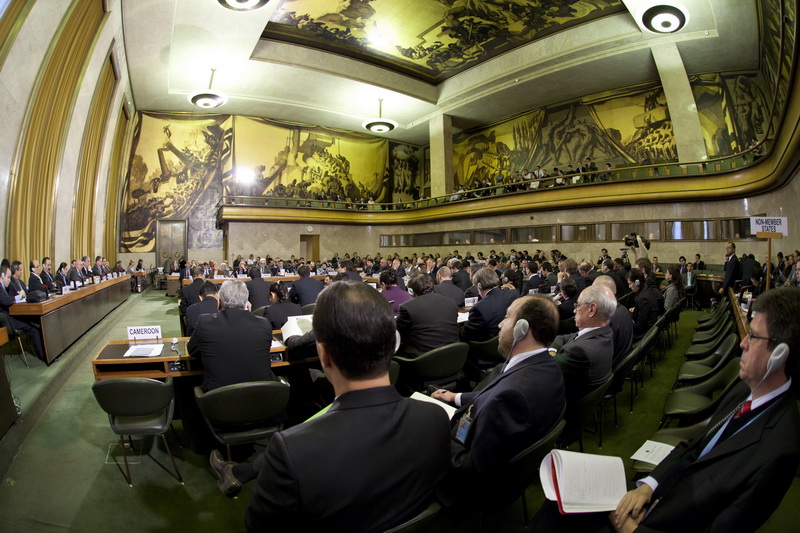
Assistant Secretary Gottemoeller Delivers the Opening Statement

Rose E. Gottemoeller, Assistant Secretary of State for Arms Control, Verification and Compliance, delivers the opening statement for the United States at the First Plenary of the 2012 Session of the Conference on Disarmament in Geneva, Switzerland, on January 24, 2012.